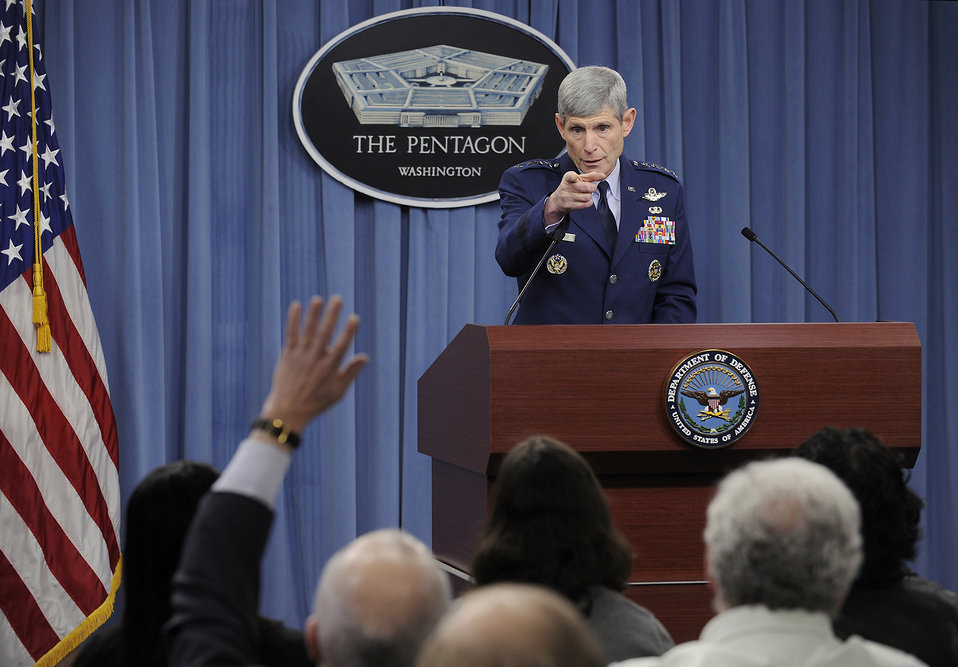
CSAF talks AF priorities

Air Force Chief of Staff Gen. Norton Schwartz delivers comments about the new defense strategy to members of the media in the Pentagon on Jan. 27, 2012. Throughout the ongoing budget process, Schwartz said, the Air Force will remain committed to its ongoing responsibilities to provide globally-postured, regionally-tailorable, full-spectrum airpower.